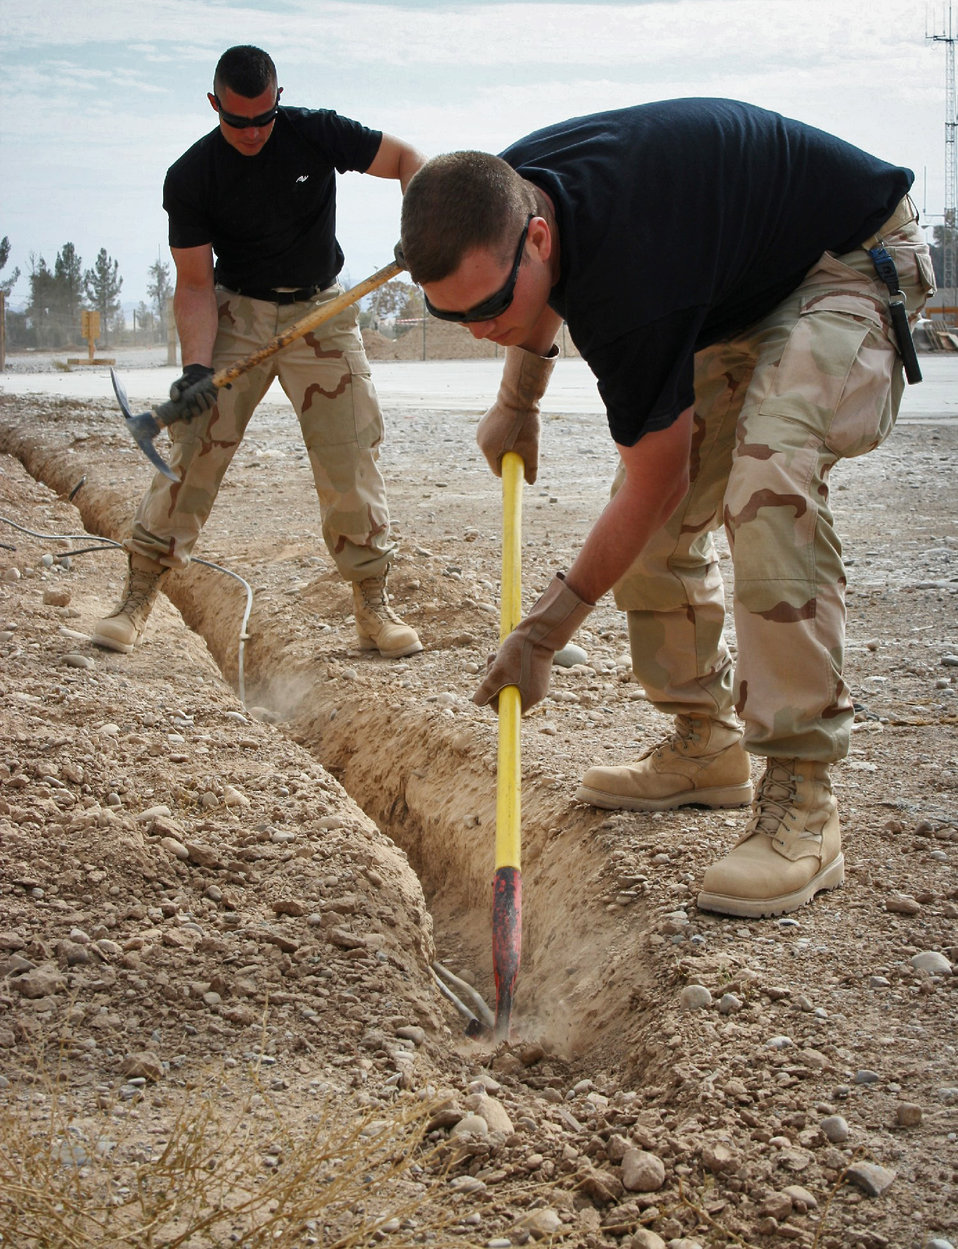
Communicators

KANDAHAR AIR FIELD, Afghanistan (AFPN) -- Staff Sgt. Jeremy Bellard (left) and Senior Airman Jeffrey Shipley help dig a ditch for relocating 2,400 feet of radar fiber and computer network and phone cable. As U.S. forces prepare to return control of the airport terminal and tower to Afghan control, combat communicators have installed more than a mile of copper and fiber cabling. Sergeant Bellard, from Church Point, La., is deployed from the Hammond Air National Guard Station in Hammond, La. Airman Shipley, from Baton Rouge, La., is also deployed from Hammond ANG Station.